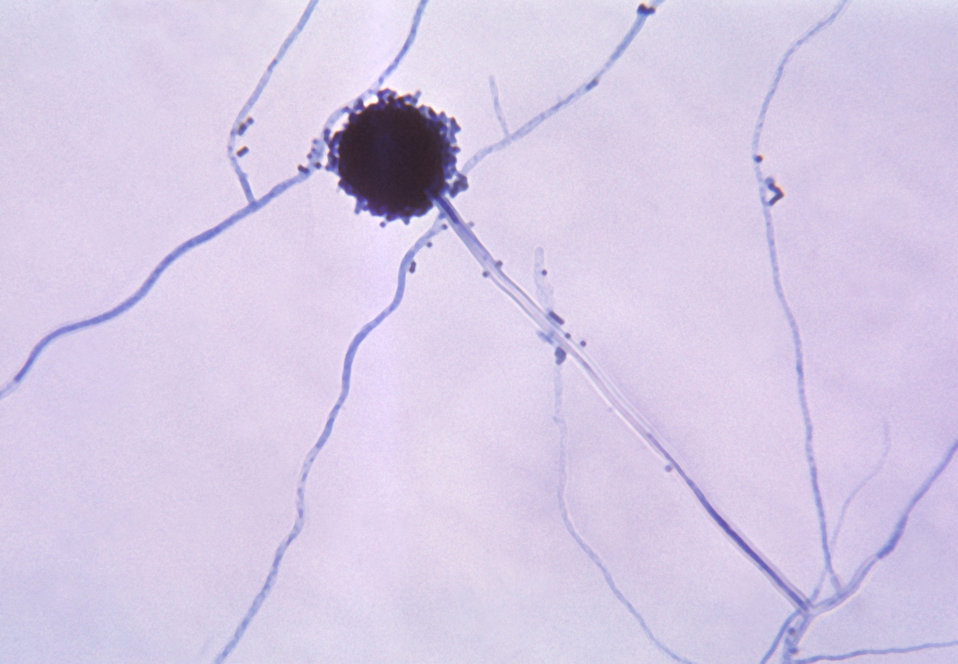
This photomicrograph shows the conidial head of an Aspergillus niger fungus.